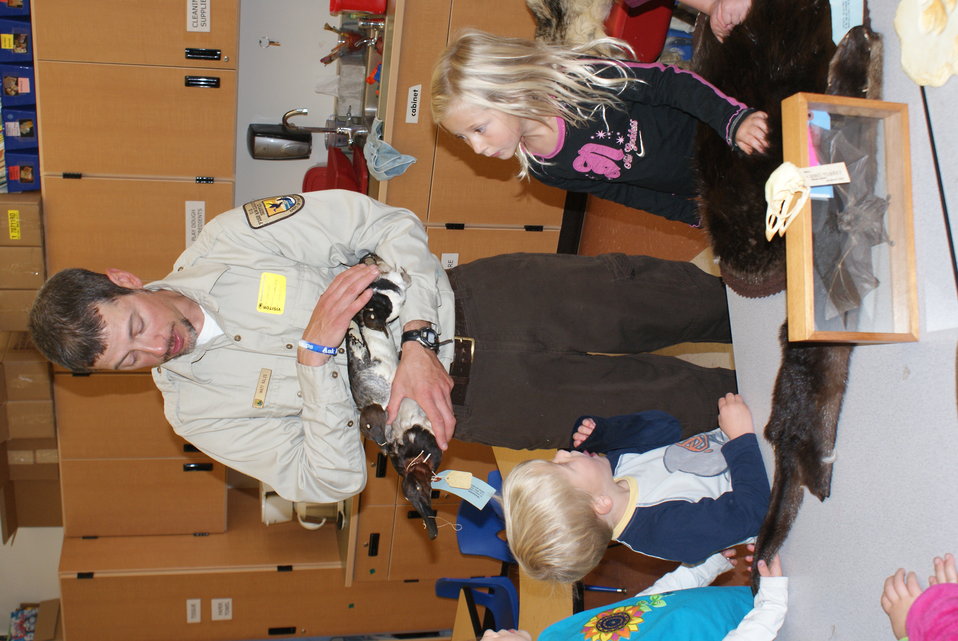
Scientists in the Community Program

U.S. Fish and Wildlife Service Mountain-Prairie Region Deputy ARD for External Affairs, Matt Kales, introduces early childhood education students at William Roberts Elementary School in Denver to some of Colorado's native and historic wildlife species.